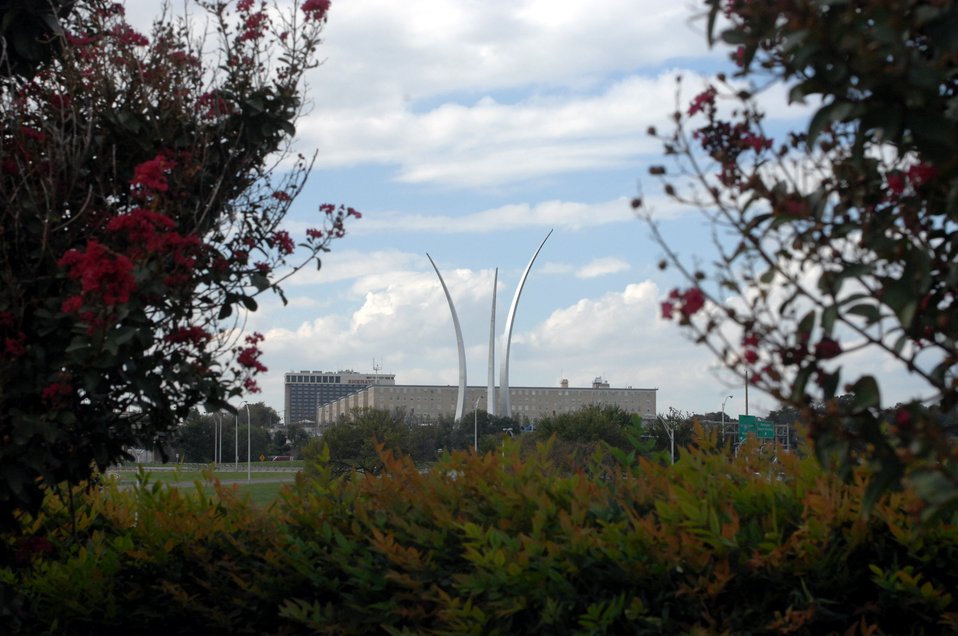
Thunderbirds practice over Air Force Memorial

The Air Force Memorial will be officially opened Oct. 14 with dedication ceremonies scheduled throughout the day, including a flyover of the Air Force Thunderbirds demonstration team.